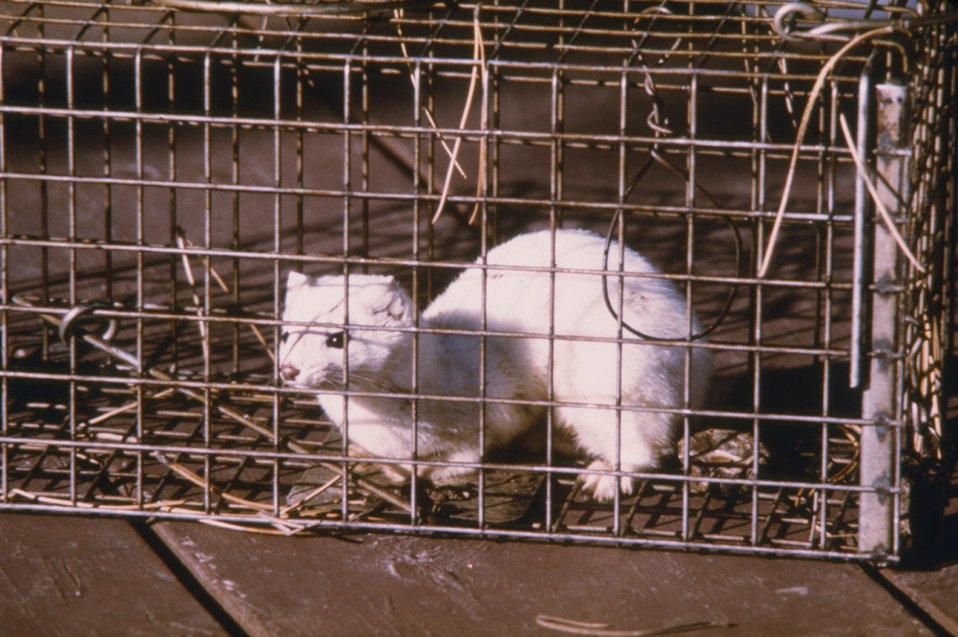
This long-tailed weasel, Mustela frenata is in its winter pelage, i.e., coat, and is a carrier of various plague vectors.